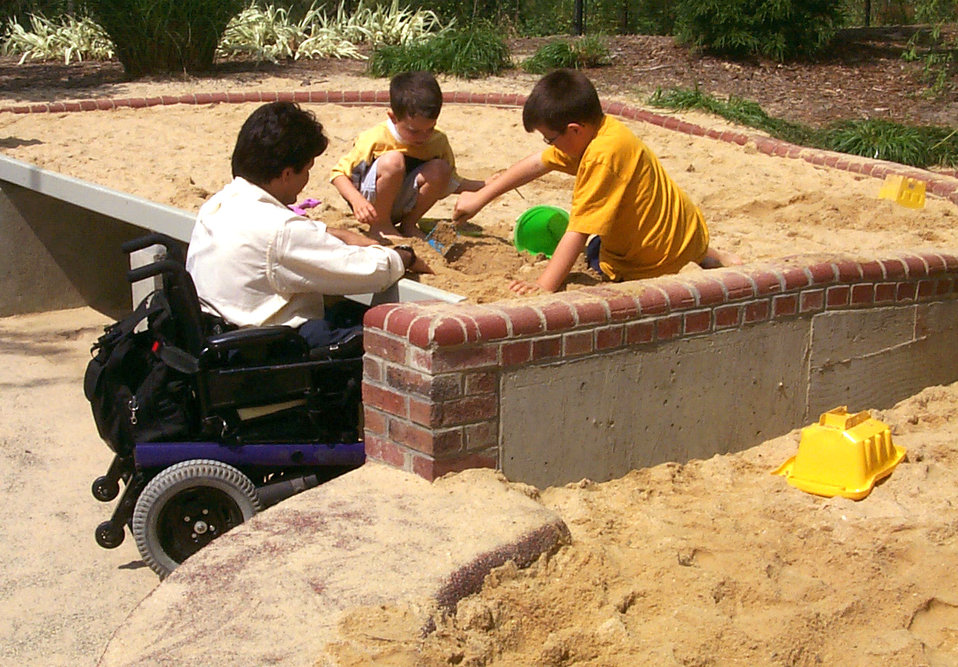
In this 2000 image (and see PHIL# 9084), a father seated in his wheelchair, was playing with his two sons who were building sand castles in a publicly-accessible sandbox. This sandbox, in a universally designed park, facilitated its use by all children, and adults as well, whether standing or sitting. Here, the father, who used a power wheelchair, was seen pulled up to the raised sandbox. He could play with them easily because knee space had been created over one cantilevered side of the sandbox. Designing recreation sites with the mobility-challenged in mind, makes for an overall more user-friendly environment for all, and is quite often made even more efficient from a utilitarian standpoint.